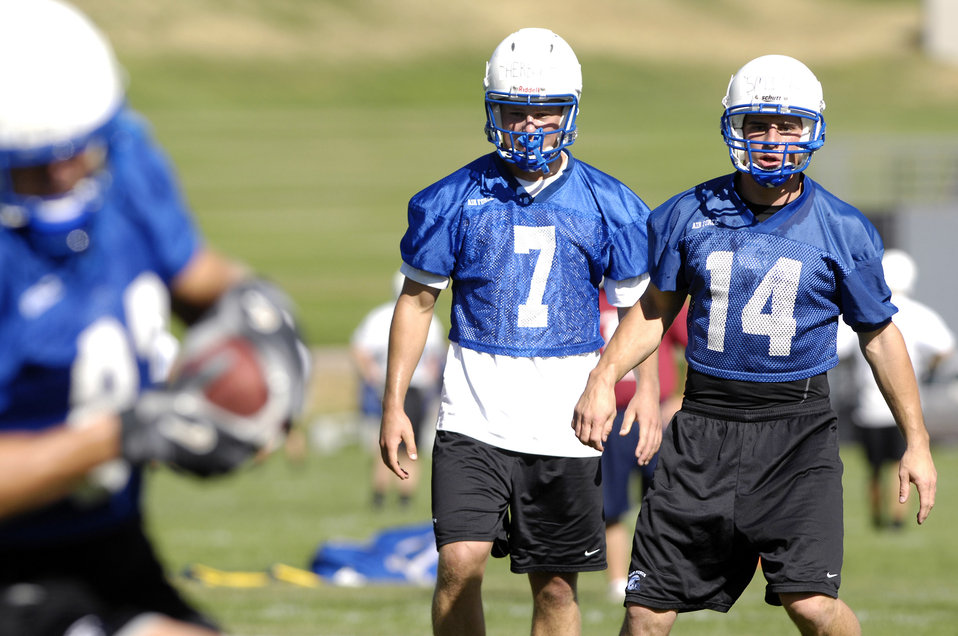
First day of football practice at the Academy

Cadet 2nd Class Eric Herbort (7) and Cadet 1st Class Shea Smith participate in pass drills as the Falcons practice in preseason camp July 31 at the U.S. Air Force Academy in Colorado. The Falcons had their best Mountain West Conference record in school history in 2007 with a 9-4 record.